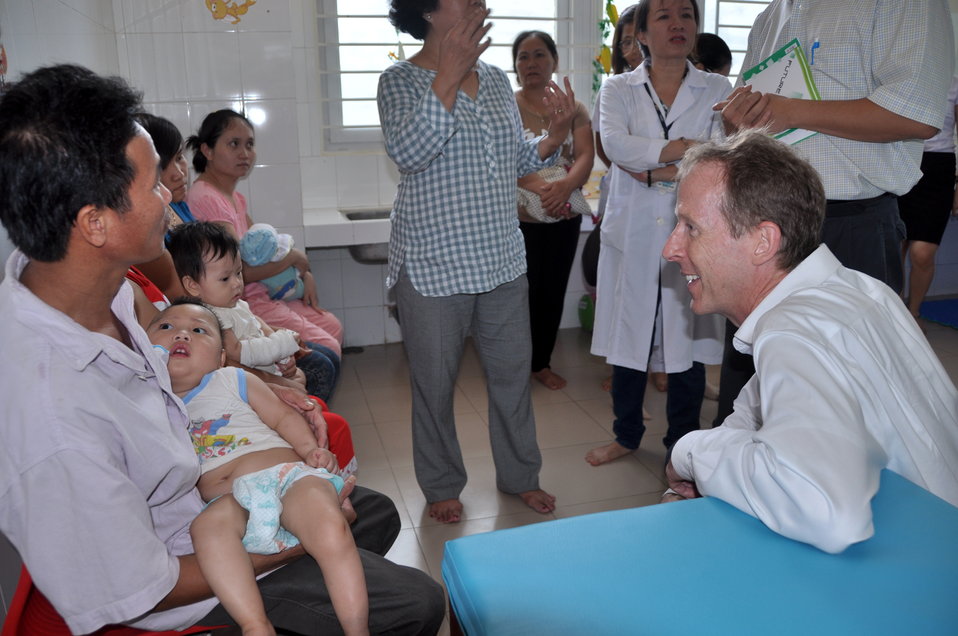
USAID Mission Director Joakim Parker and USAID Partners Join to Open Rehabilitation Department at Women's and Children's Hospital of Danang

July 16, 2013